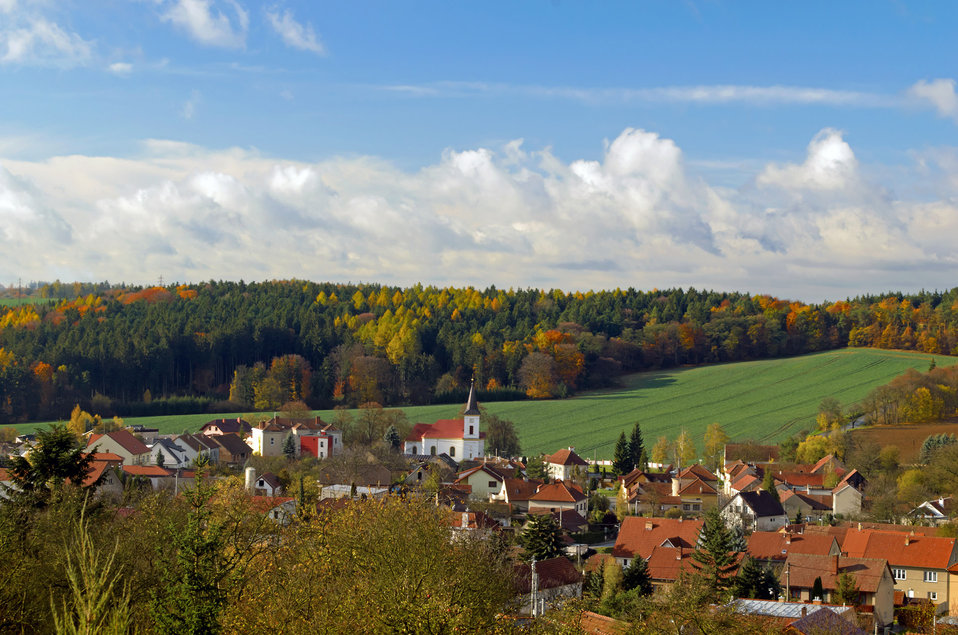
Autumn seasons.